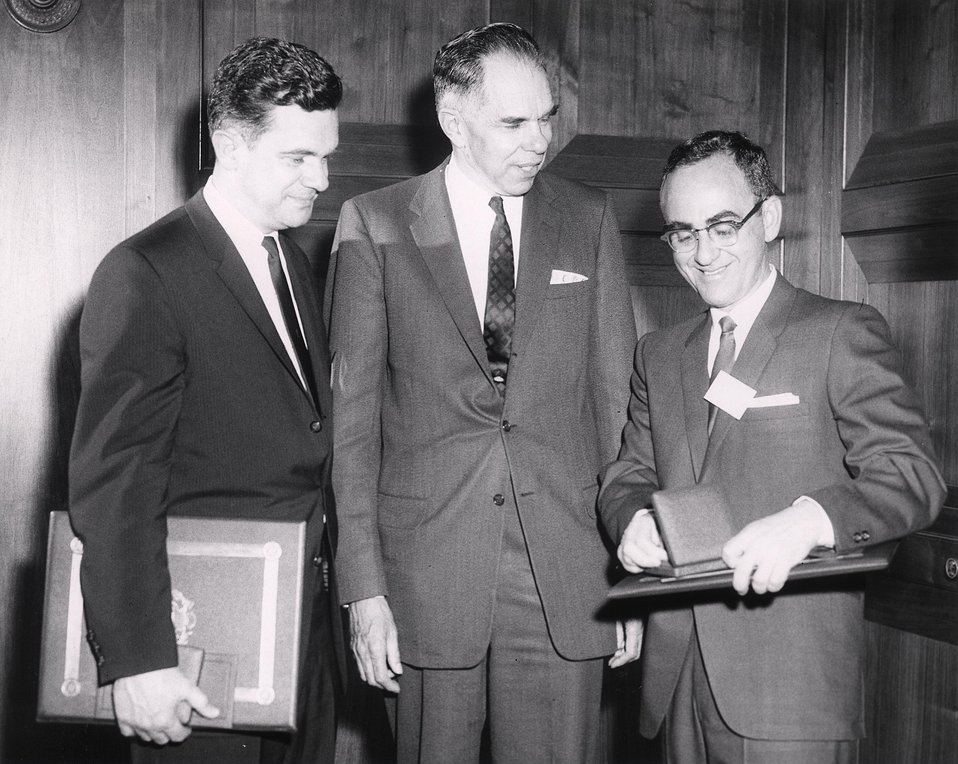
Lawrence Award Ceremony, 1965.